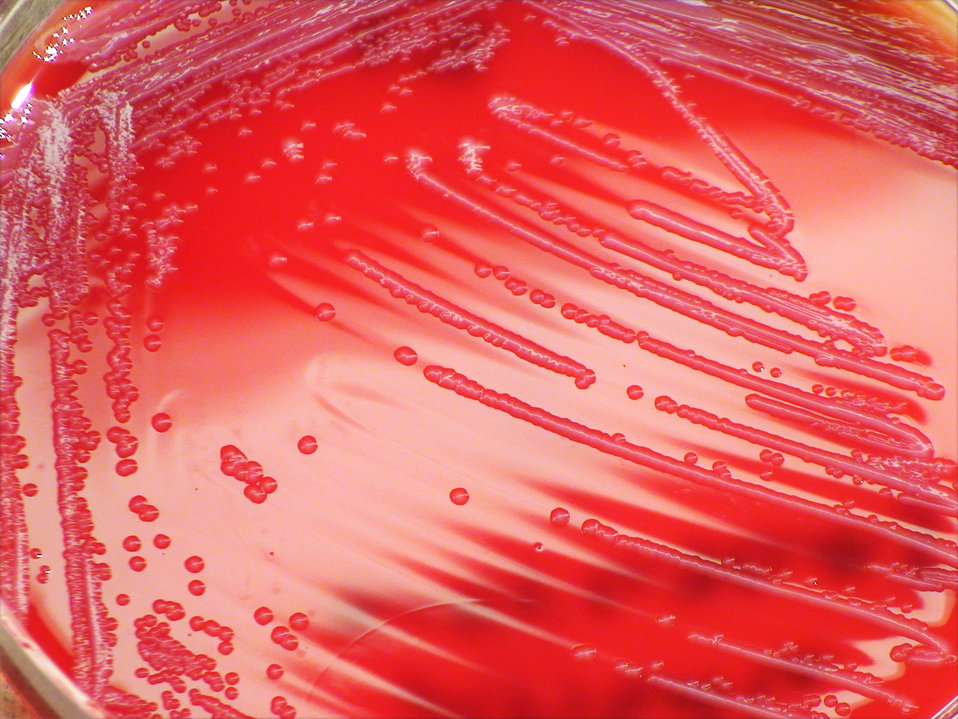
This photograph depicts the colonial morphology displayed by Gram-negative Serratia marcescens bacteria, which was grown on a medium of sheep's blood agar (SBA), for a 24 hour time period, at a temperature of 37�C.